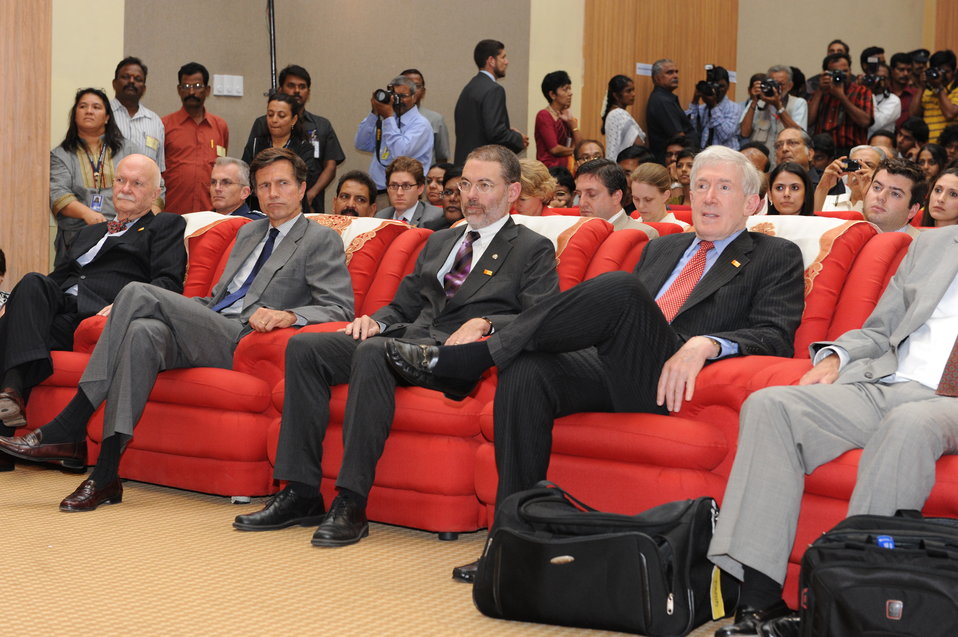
Ambassador Burleigh, Assistant Secretary Blake, Consul General Simkin, and Under Secretary Hormats Listen to Secretary Clinton Speak

From left to right, Ambassador Peter Burleigh, Charge d'Affaires of the U.S. Mission in India; U.S. Assistant Secretary of State for South and Central Asian Affairs Robert O. Blake; Andrew Simkin, U.S. Consul General in Chennai, India; and U.S. Under Secretary for Economic, Energy and Agricultural Affairs Robert D. Hormats listen to U.S. Secretary of State Hillary Rodham Clinton speak at Anna Centenary Library (ACL) in Chennai, India, on July 20, 2011. [Paul Cohn/ State Department photo]